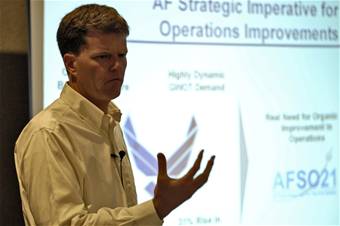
AFSO 21

Dr. Ronald C. Ritter speaks to members of the Hickam Air Force Base, Hawaii, Logistics Officers Association Jan. 10 about Air Force Smart Operations for the 21st century. Dr. Ritter is the Air Force special assistant for AFSO 21. He is helping Headquarters Pacific Air Forces and the Hawaii Air National Guard develop AFSO 21 initiatives.